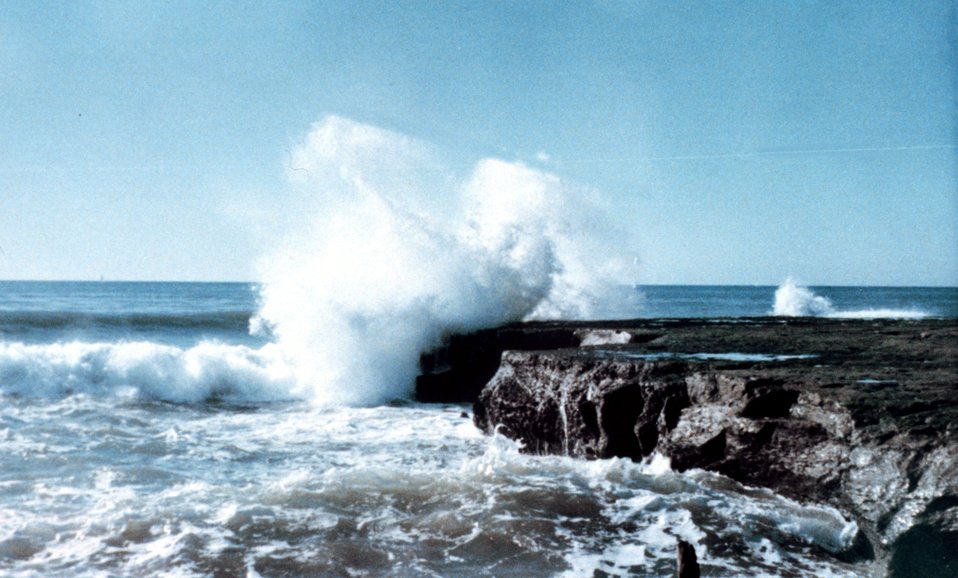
Surf encountering a rocky headland at Soquel Point.